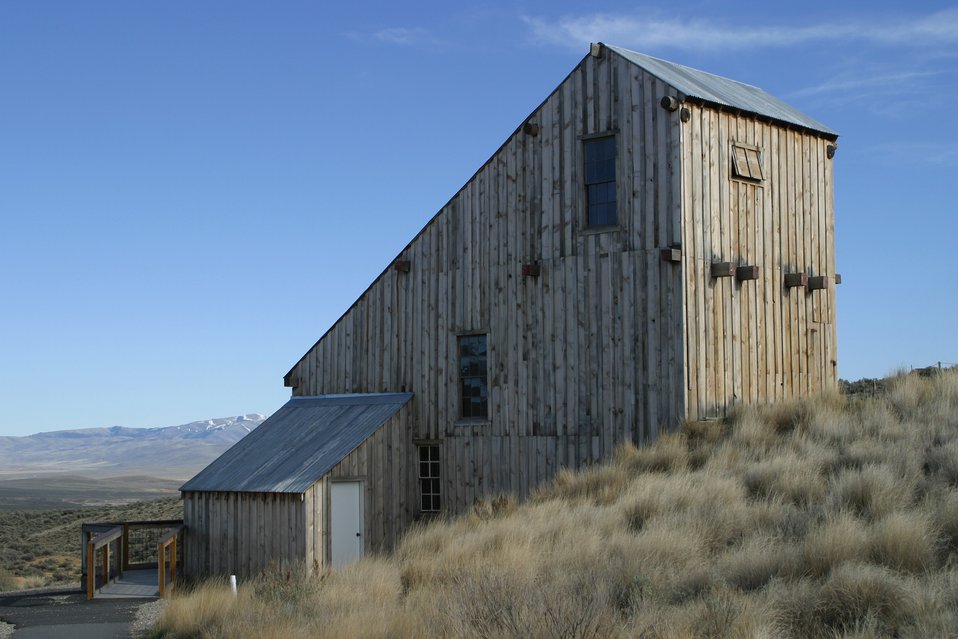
A replica of the Rabbit Mine 1926 stamp mill near Greenhorn in the Blue Mountains of eastern Oregon. It is used to interpret the importance of mining in western history, and the relationship of gold mining to the westward migration story.